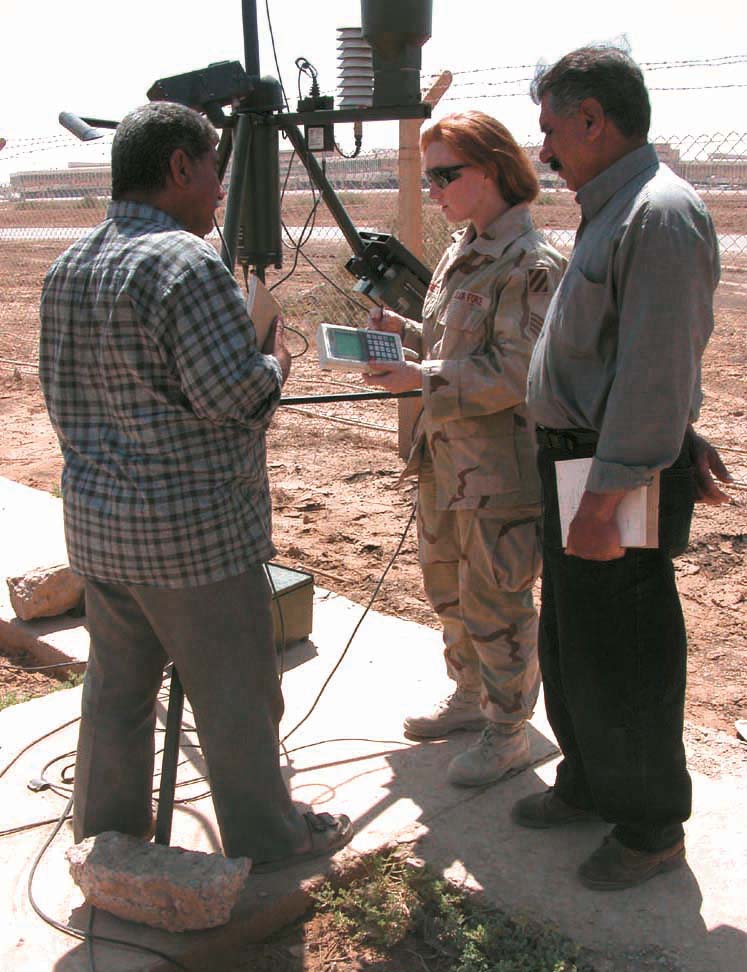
Iraqi weather

OPERATION IRAQI FREEDOM -- Staff Sgt. Julie Moretto show two members of Iraq's meteorological organization how to detect thunderstorms and lightning. Moretto is a 447th Air Expeditionary Group airman deployed to Baghdad from the 15th Air Support Operations Squadron at Hunter Army Air Field, Ga.